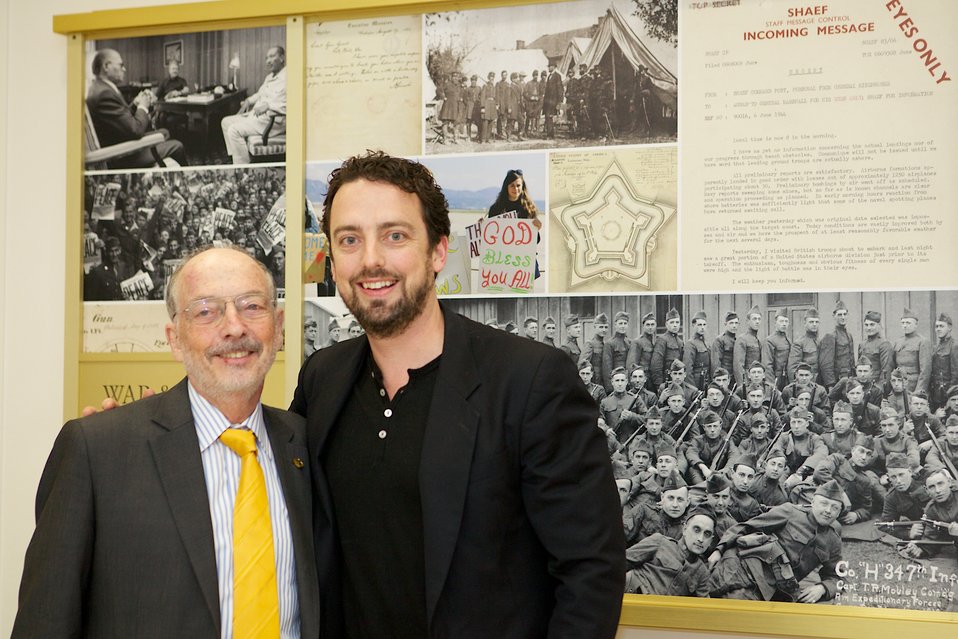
The Gettysburg Story and The Wheatfiled; Jake Boritt (right), filmmaker, and Gabor S. Boritt (left), Lincoln and Civil War era scholar